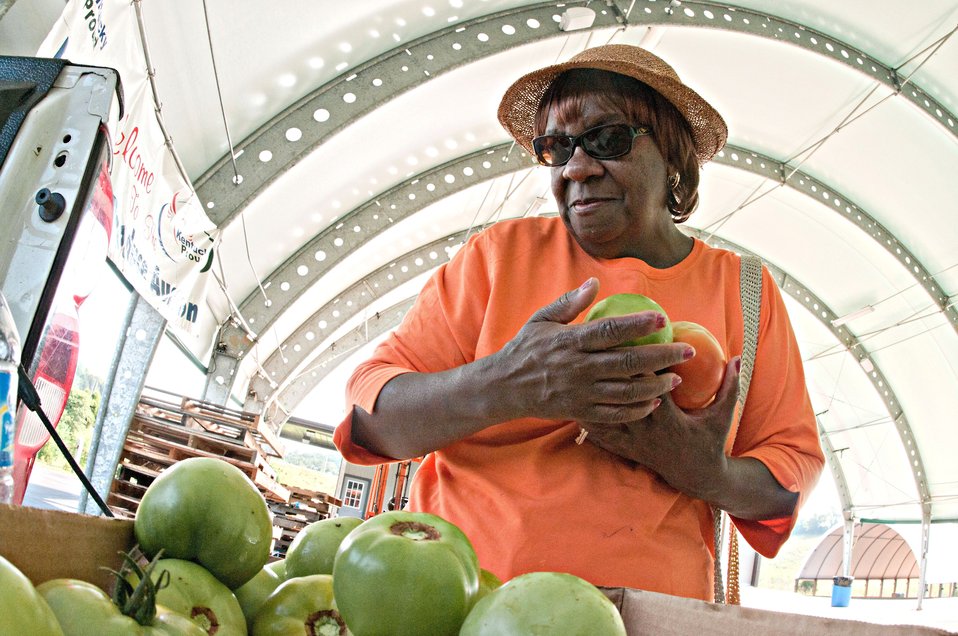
Janice Potts carefully eyes the next green tomato to add her purchase of heirloom tomato's using her Senior Farmer's Market Nutrition Program check to pay for, at the Bath County Agricultural Education and Marketing Center, Owingsville, KY, on Friday, July 15, 2011. The Center was the recipient of a $400,000 Rural Business Enterprise Grant. It has given farmers and producers from Bath and surrounding counties the opportunity to manufacture and market their locally grown and locally produced value-added and “Kentucky Proud” branded products, including but not limited to, fresh produce, artisan crafts and specialty food products. The Center is open year-round and allow residents to sell products in four different retail categories, including Kentucky products, regional crafts, “green” groceries and bakery/deli. Several producers expressed their gratitude for Rural Development’s assistance in making the center a reality. The project was made possible through funding the American Recovery and Reinvestment Act of 2009 enacted by the 111th United States Congress in February 2009 and signed into law on February 17, 2009, by President Barack Obama.